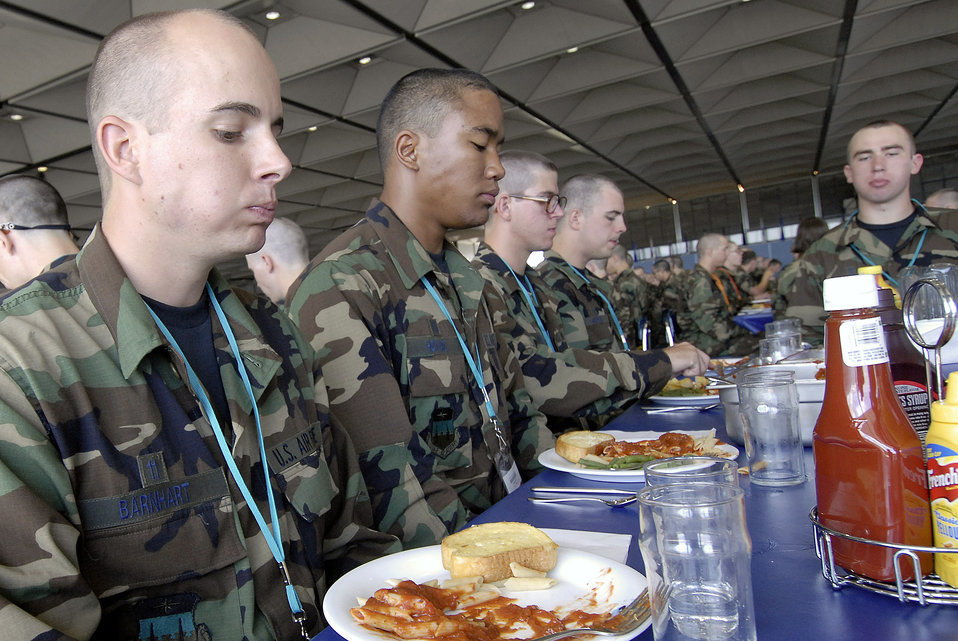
Eyes on the eagle

Basic cadet trainees prepare to eat their first lunch since arriving as the Class of 2011 June 29 at the U.S. Air Force Academy in Colorado. The cadets are in their first week of training and must not take their eyes off the eagle on their plate as they eat. They are in the first half of basic cadet training, commonly known as